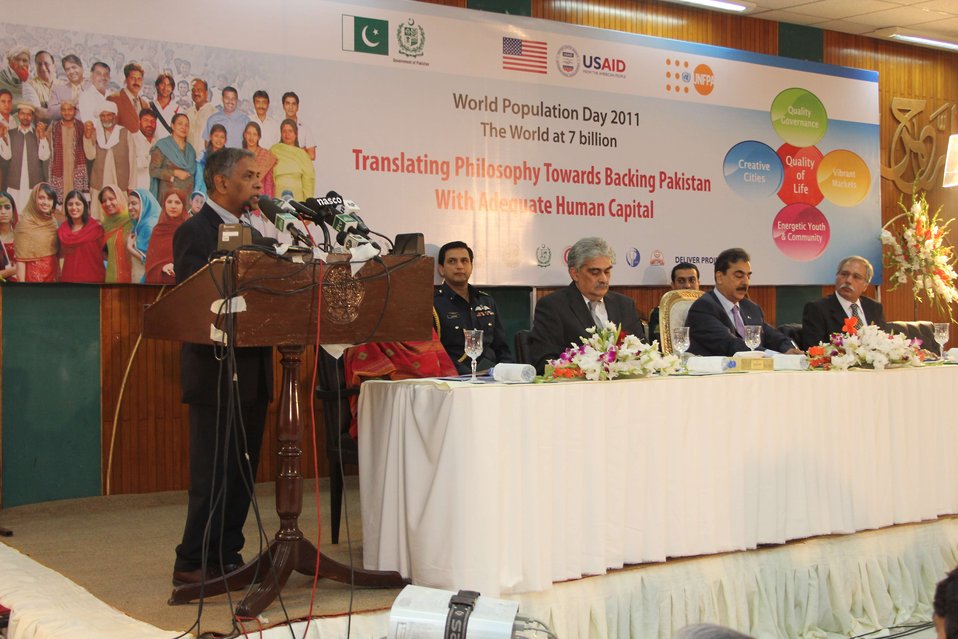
World Population Day -- Launch of Logistic Management Information System and Contraceptive Procurement Manual

The USAID-supported Logistics Management Information System is Pakistan’s first web-based system designed to help health care officials track and thereby improve the supply of contraceptives to the public health system. Currently, the Government of Pakistan uses a paper-based system with a two-month lag in reporting, which impedes the ability of the health departments to respond to the needs of the health facilities.

The system will be used by population and health departments at the federal, provincial, and district levels, in line with the devolution of health services under the 18th Amendment to the Pakistani constitution. It will also work in collaboration with the United Nations Population Fund and non-governmental organizations.

Additionally, USAID helped design the Contraceptive Procurement Manual that presents best practices in international procurement and promotes transparency, accountability, and efficiency in the procurement process.